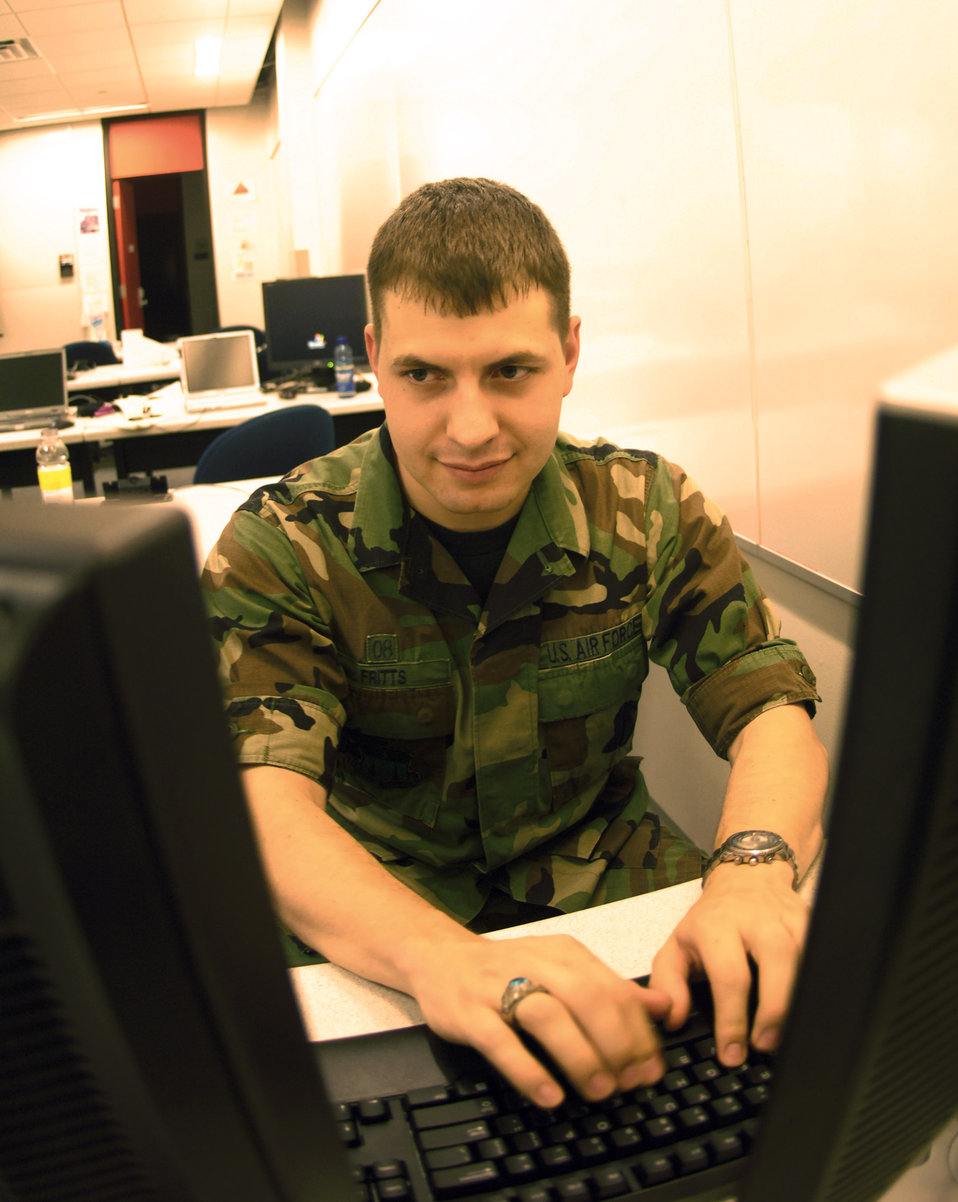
Cadet cyberwarriors head to AFIT

Cadet 1st Class Nick Fritts goes through computer code May 12 in one of the Air Force Academy's computer labs. The cadet, a member of Cadet Squadron 12 and a Dallas native, will be one of the first Academy graduates to go directly from the school to the Air Force Institute of Technology's cyber warfare track. Cadet Fritts spent three years managing corporate computer networks before joining the military.